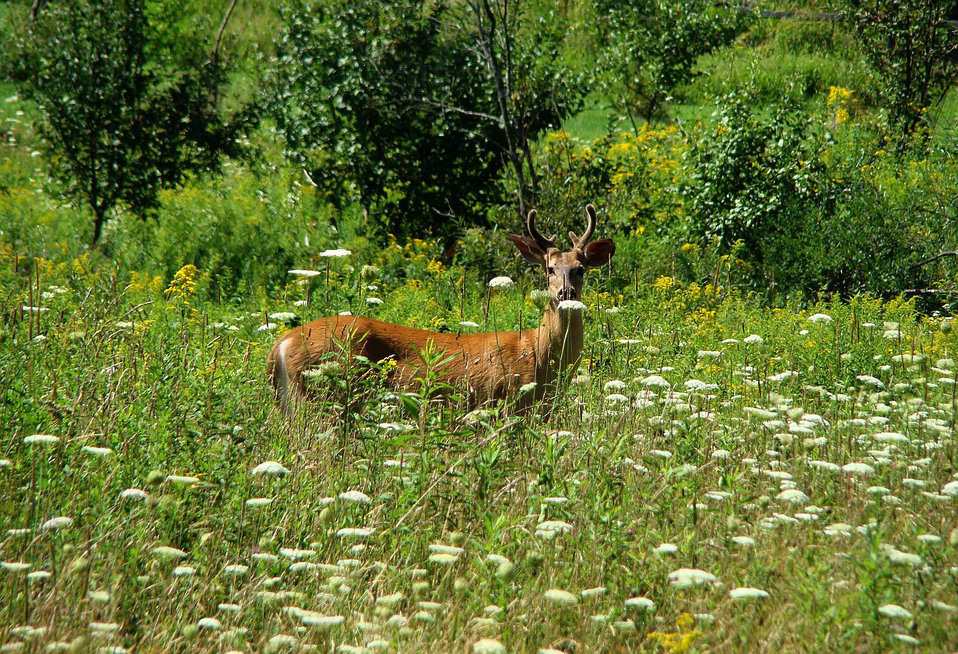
Observer

Young and curious.